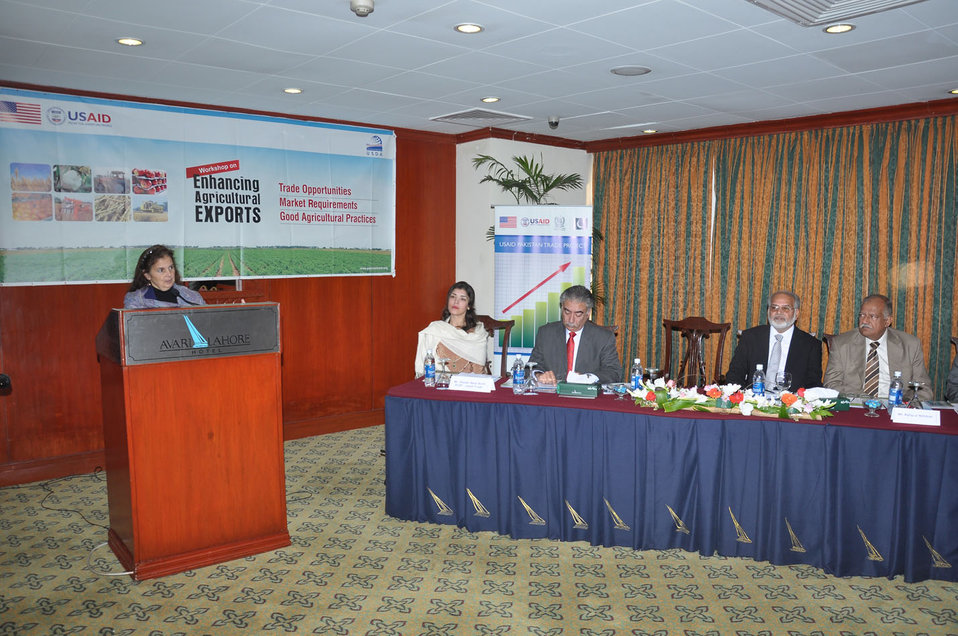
Ms. Nina Fite, U.S. Consul General is addressing the participants at AG workshop organized by USAID Trade Project